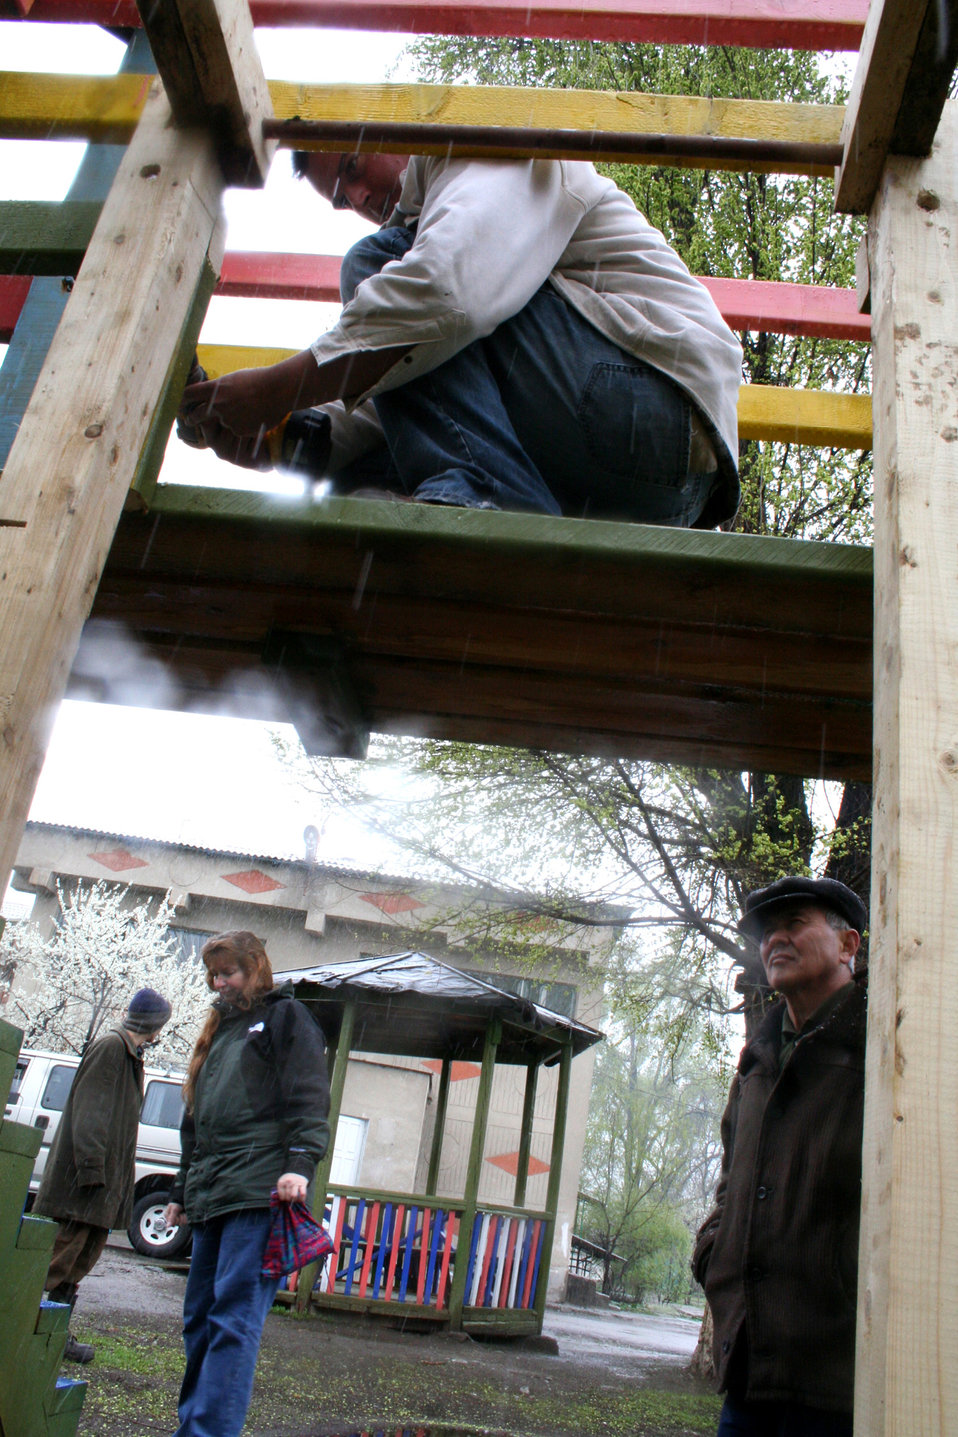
Orphanage favorite off-duty destination for Manas Airmen

A groundskeeper watches Senior Airman John Burgess put final touches on monkey bars he designed for the playground outside the Belovodsky Orphanage for children with special needs. Airman Burgess has volunteered many off-duty hours helping design and build playground equipment for the orphange, located in Belovodsky, Kyrgyzstan.